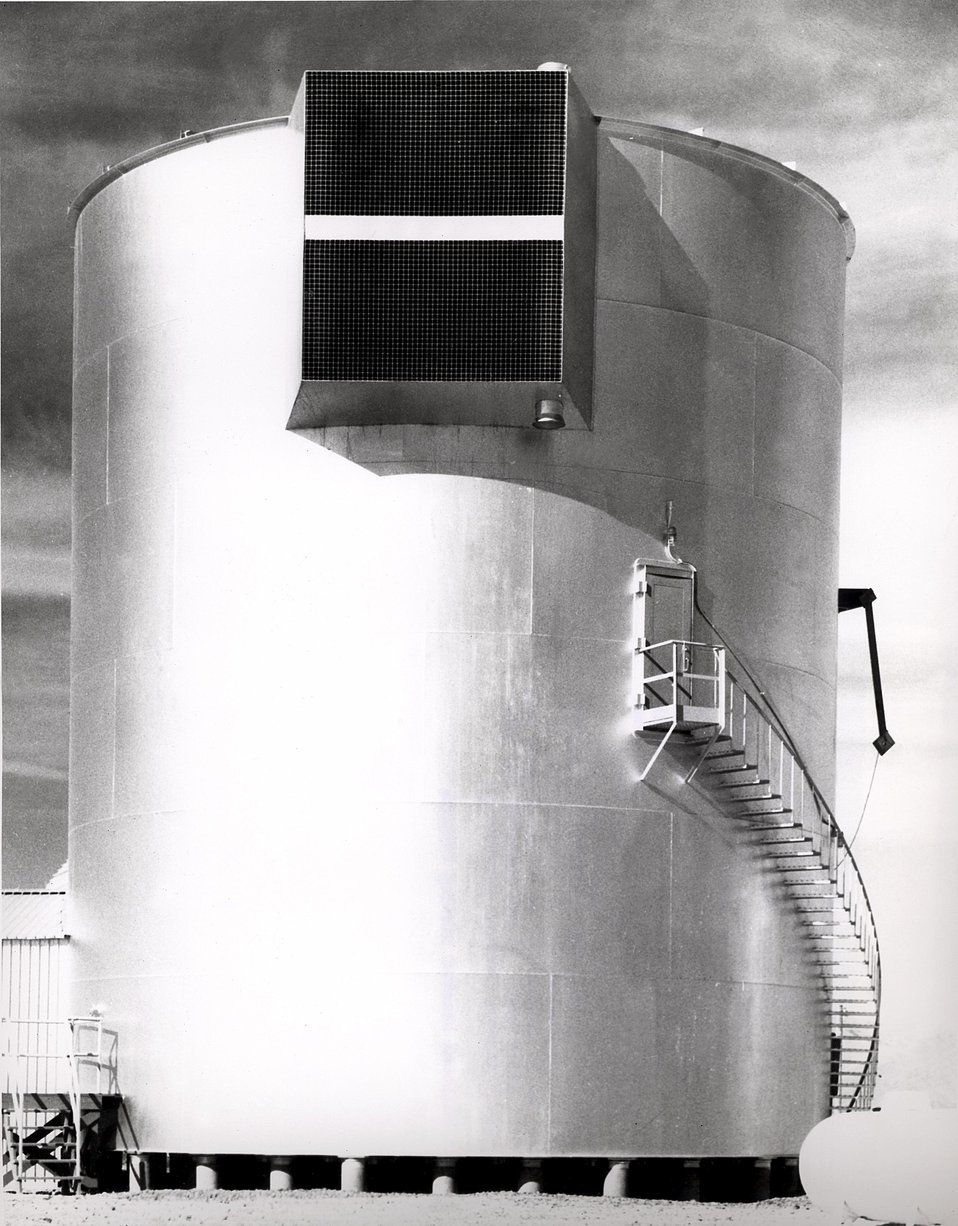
Exterior view of the Stationary Low No 1 reactor tank at the AEC's National Reactor Testing Station, Idaho.
c.1959